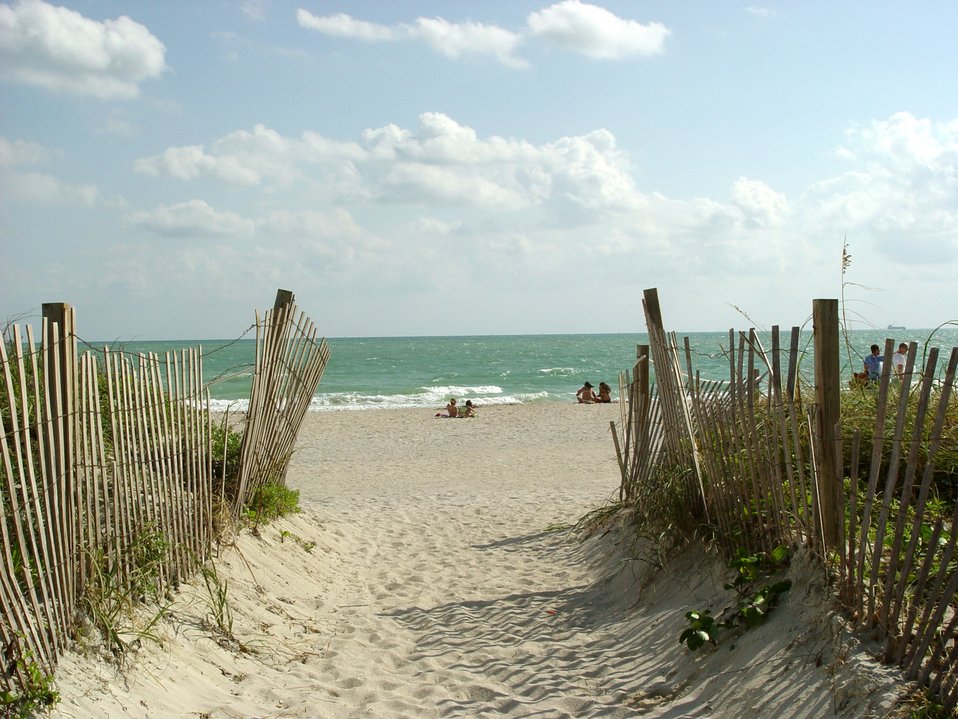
South Beach, Texas